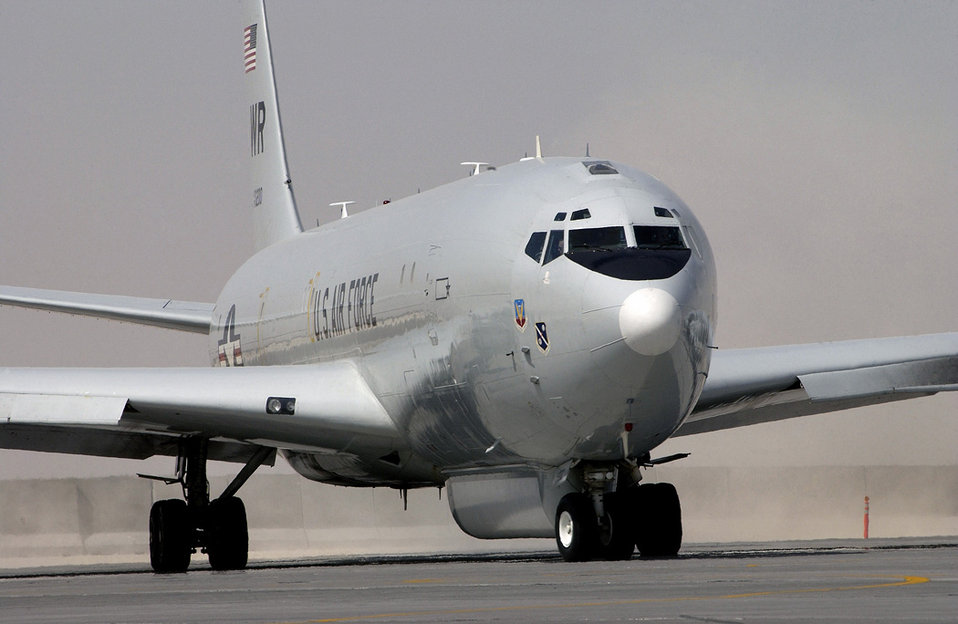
Airpower Summary for June 24

An Air Force E-8C Joint Surveillance Tracking Acquisition Reconnaissance System, or J-STARS, aircraft assigned to the 128th Expeditionary Air Command and Control Squadron taxis prior to take-off on a combat sortie in support of Operation IRAQI FREEDOM.